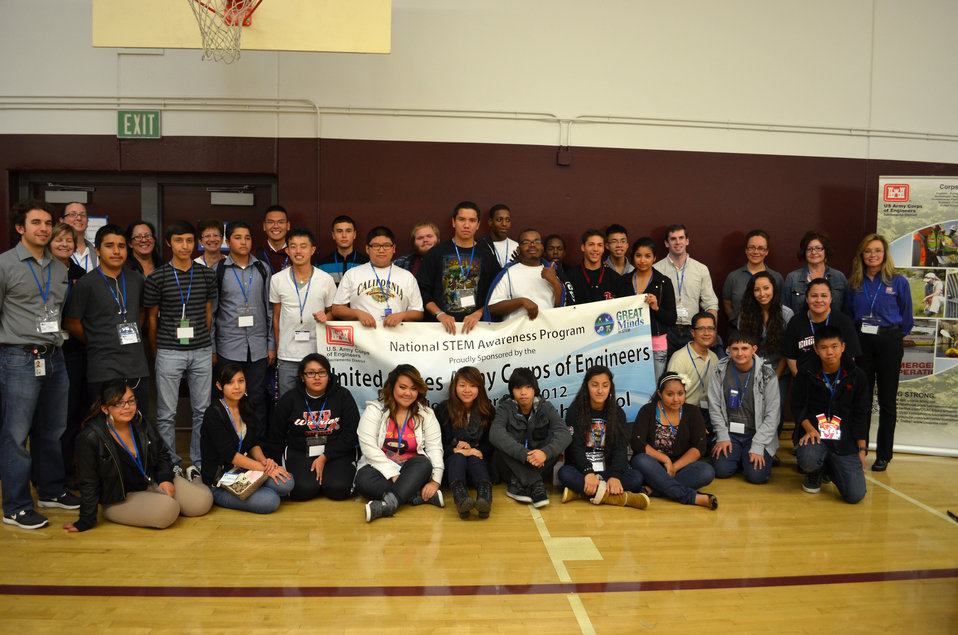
STEM day at Hiram W. Johnson High School

Volunteers from the U.S. Army Corps of Engineers Sacramento District pose with students at Hiram W. Johnson High School in Sacramento, Calif., for a photograph during a science, technology, engineering and mathematics - or STEM - event Nov. 9, 2012. Hosted by the Sacramento District, the STEM event provided an opportunity for the students to learn more about degrees and careers in STEM-related fields.